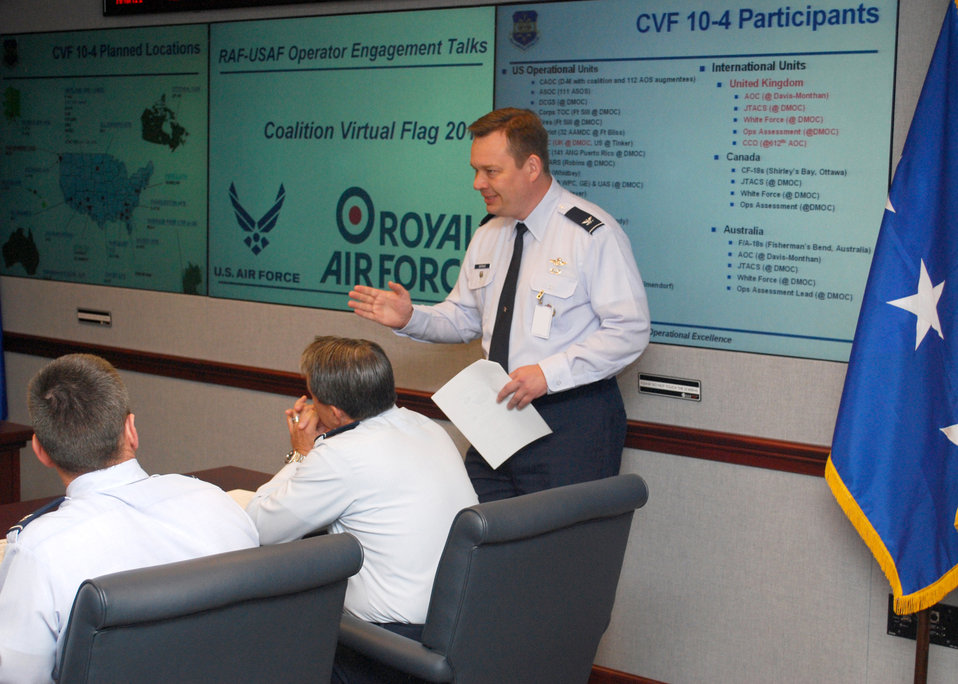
CVF 10-4

Col. Steven Dutkus kicks-off the coalition training efforts discussion between Lt. Gen. Philip Breedlove and Air Marshal Richard Garwood. While in the Pentagon's Warfighter Capability Demonstration Center, they were able to view live feeds from the training exercise Coalition Virtual Flag 10-4 and discuss their continued encouragement of coalition play in synthetic training and distributed mission operations. General Breedlove is the Air Force Deputy Chief of Staff for Operations, Plans and Requirements, Air Marshal Garwood is the Royal Air Force Deputy Commander-in-Chief Operations and Colonel Dutkus is from Air Force Air, Space and Information Operations